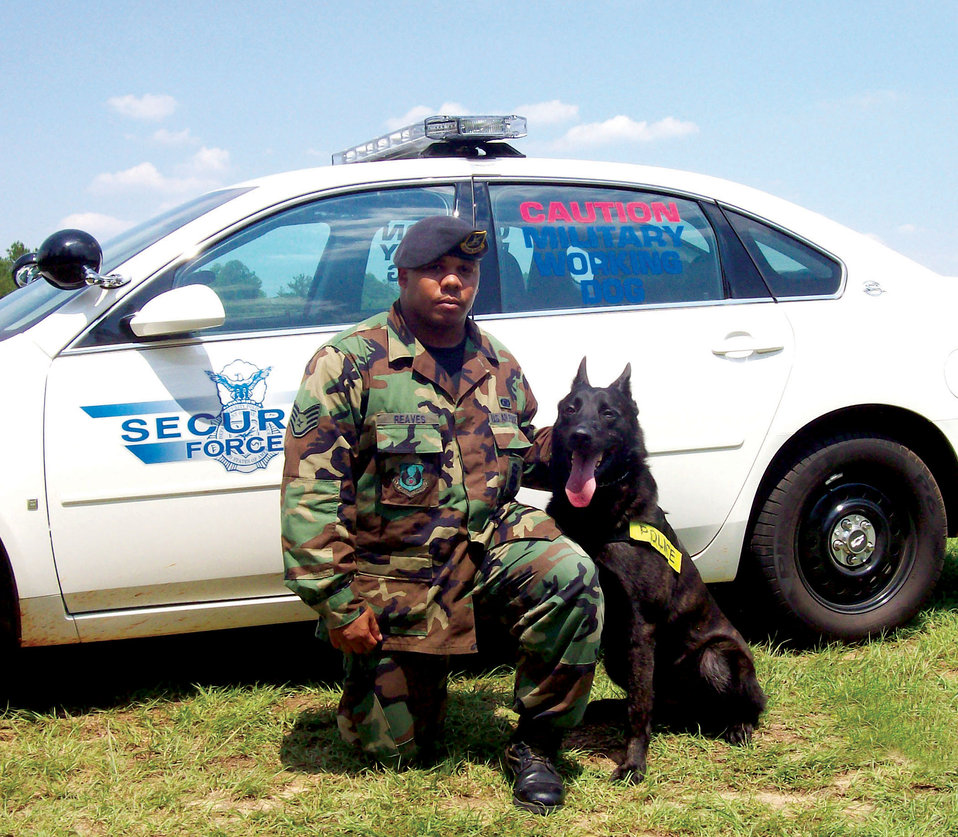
Military working dog dies defending freedom

Staff Sgt. Marcus Reaves sits with his military working dog, Arras, at Robins Air Force Base, Ga. Arras was killed Sept. 25 when he touched a location that was electrified by power cables during a search for weapons and explosives in a building in Iraq. Sergeant Reaves is a military working dog handler in the 78th Security Forces Squadron's Military Working Dog Section.